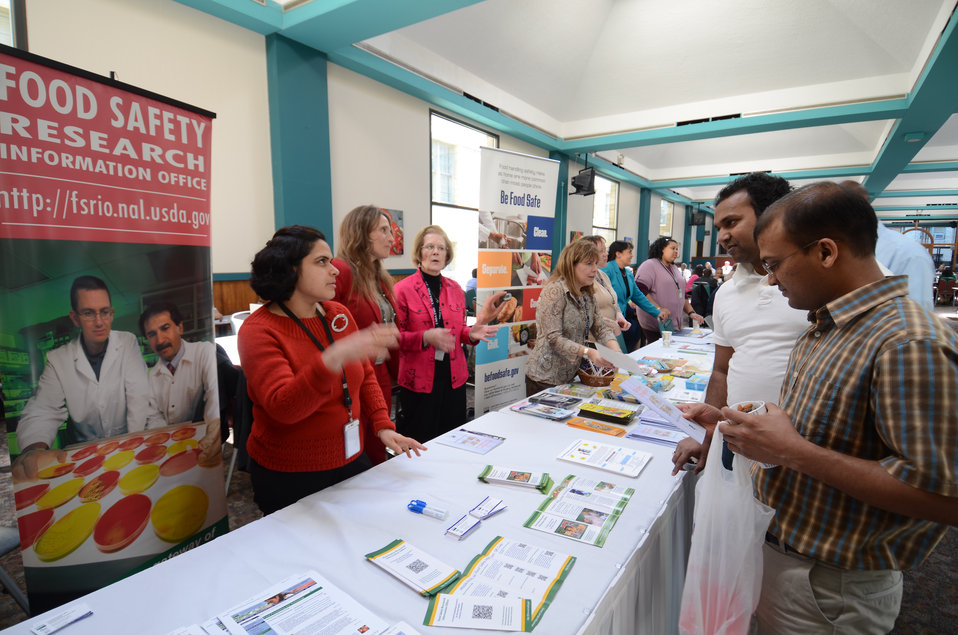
Vaishali Dharmarha (left) provided answers for visitors to the Food Safety Research Information Office table at the Department of Agriculture celebration of the introduction of the Dietary Guidelines for Americans 2010, an informational event in the Whitten Café in Washington, D.C., on Wednesday, March 2, 2011. The event had representatives from Agricultural Marketing Service (AMS); Agricultural Research Service (ARS - including Food and Nutrition Information Center - FNIC, and Food Safety Information Center – FSIC); Economic Research Service (ERS); Food, Nutrition & Consumer Services (FNCS); Food Safety and Inspection Service (FSIS); National Institute of Food and Agriculture (NIFA); USDA Office of Operations (Departmental Management); Food and Drug Administration (FDA); and Sodexo.